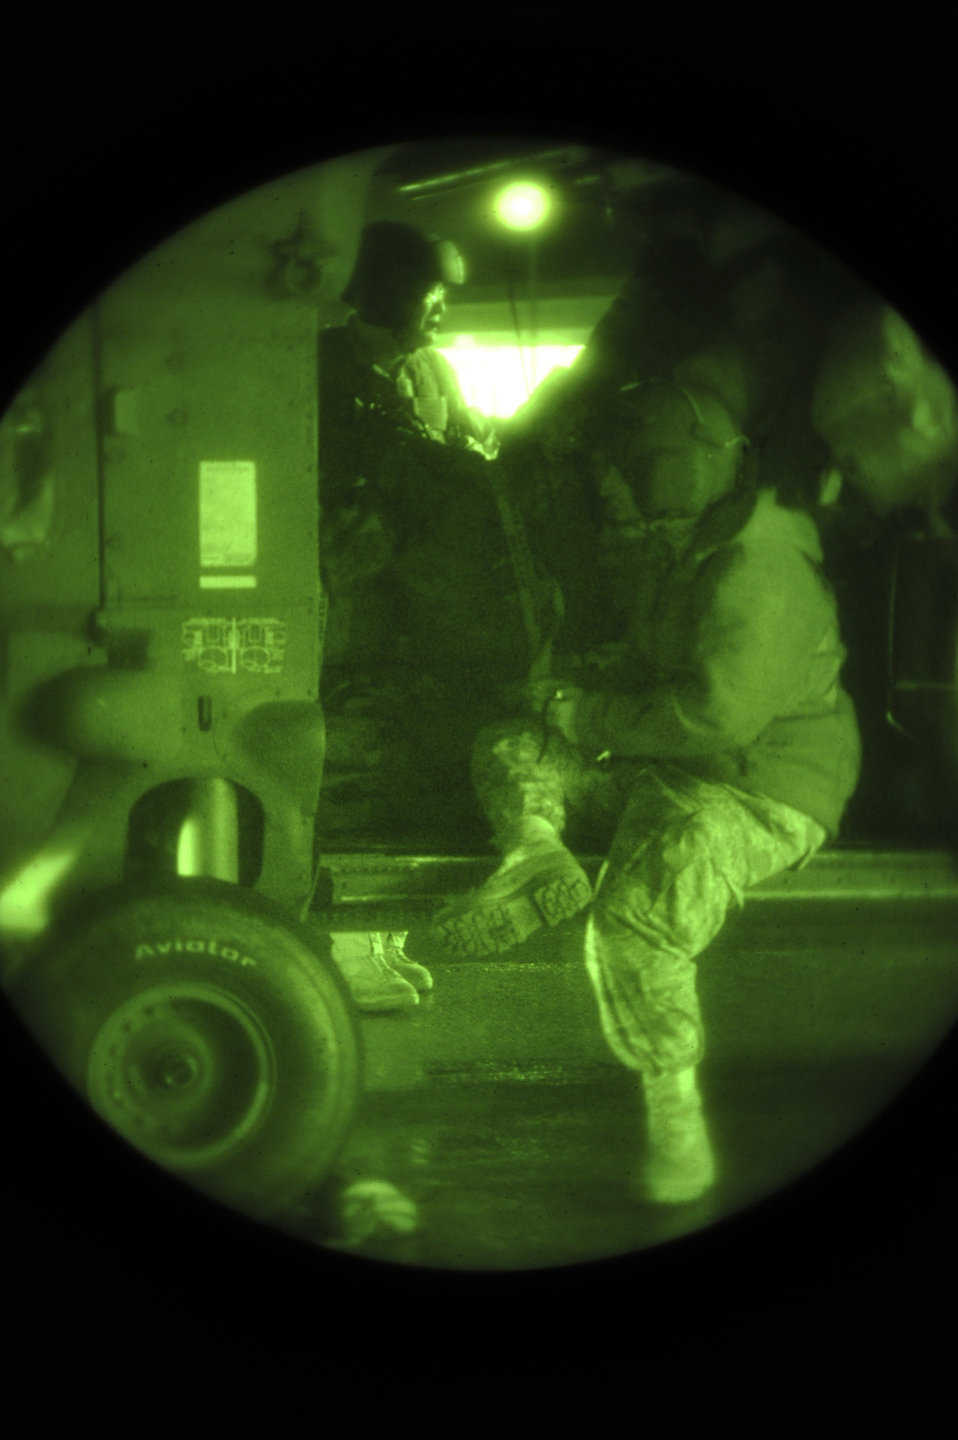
33rd RQS head to Mainland for search and rescue

James Turnage, a maintenance flight test pilot and Staff Sgt. Justin Spritzer, a flying crew chief, both with the 33rd Rescue Squadron standby to complete final pre-flight inspections before taking off for mainland Japan, here at Kadena Air Base, March 13. 100 plus personnel from Kadena AB will head north to provide medical and electrical power capabilities.